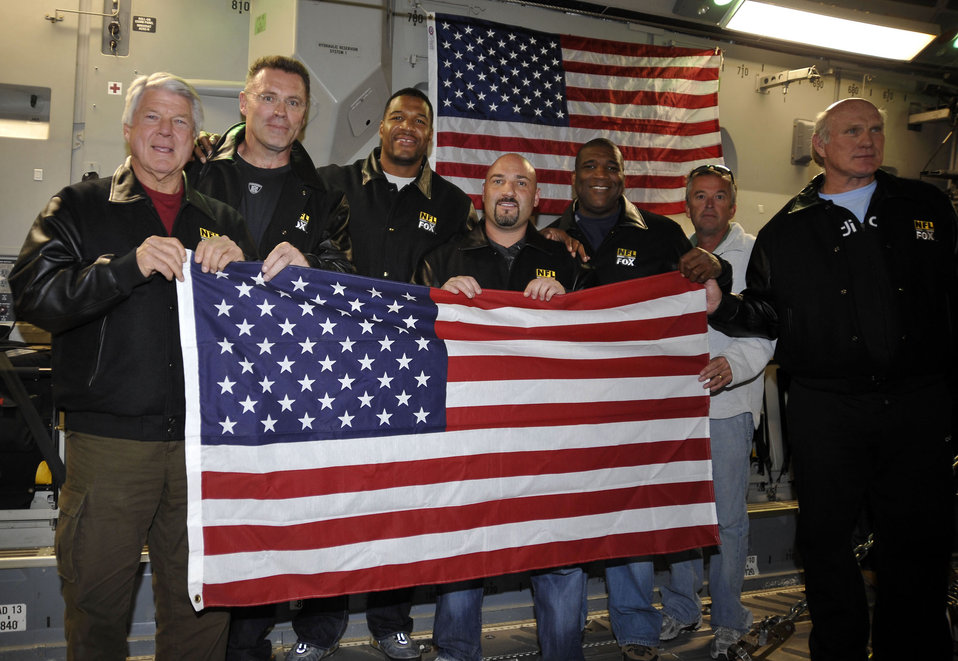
C-17 aircrew scores touchdown in mission with NFL greats

The